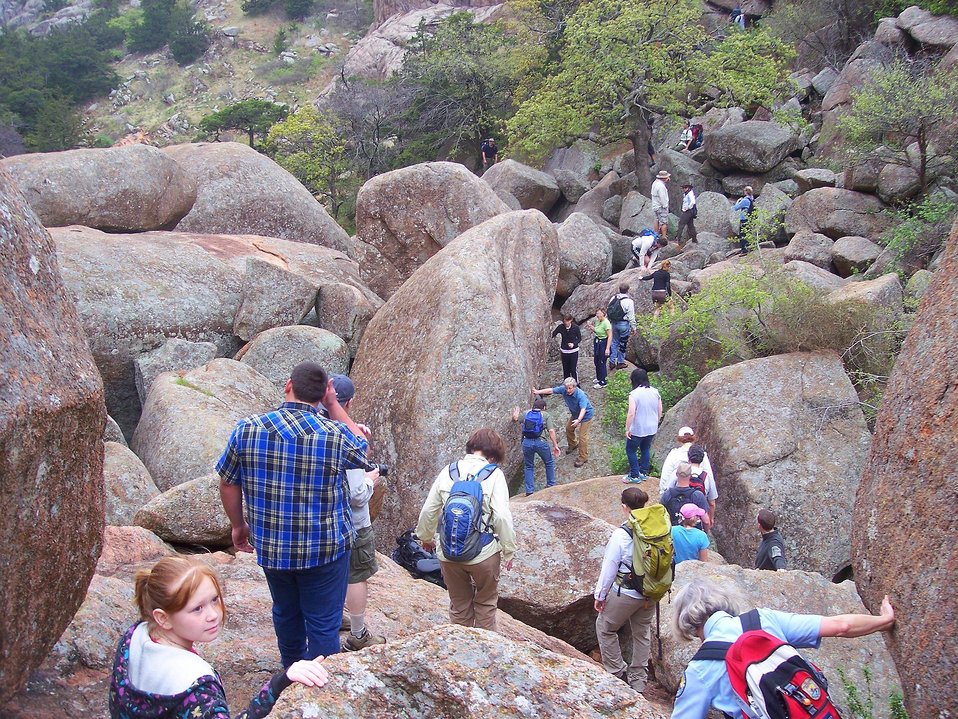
Charon's Garden Trail3, Wichita Mountains Refuge

Wichita Mountains National Wildlife Refuge, Oklahoma.